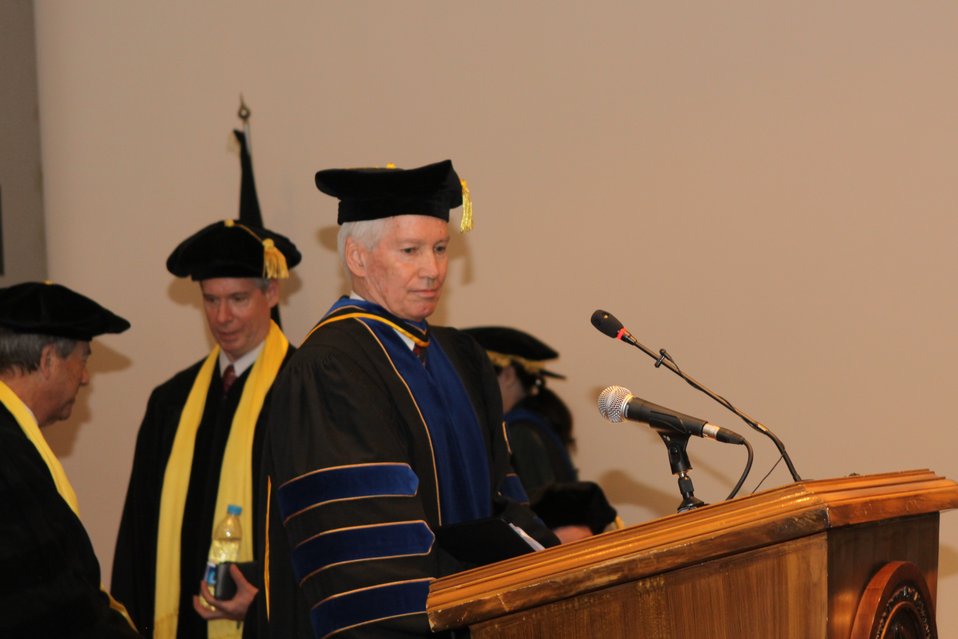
100526 AUAF Graduation 120